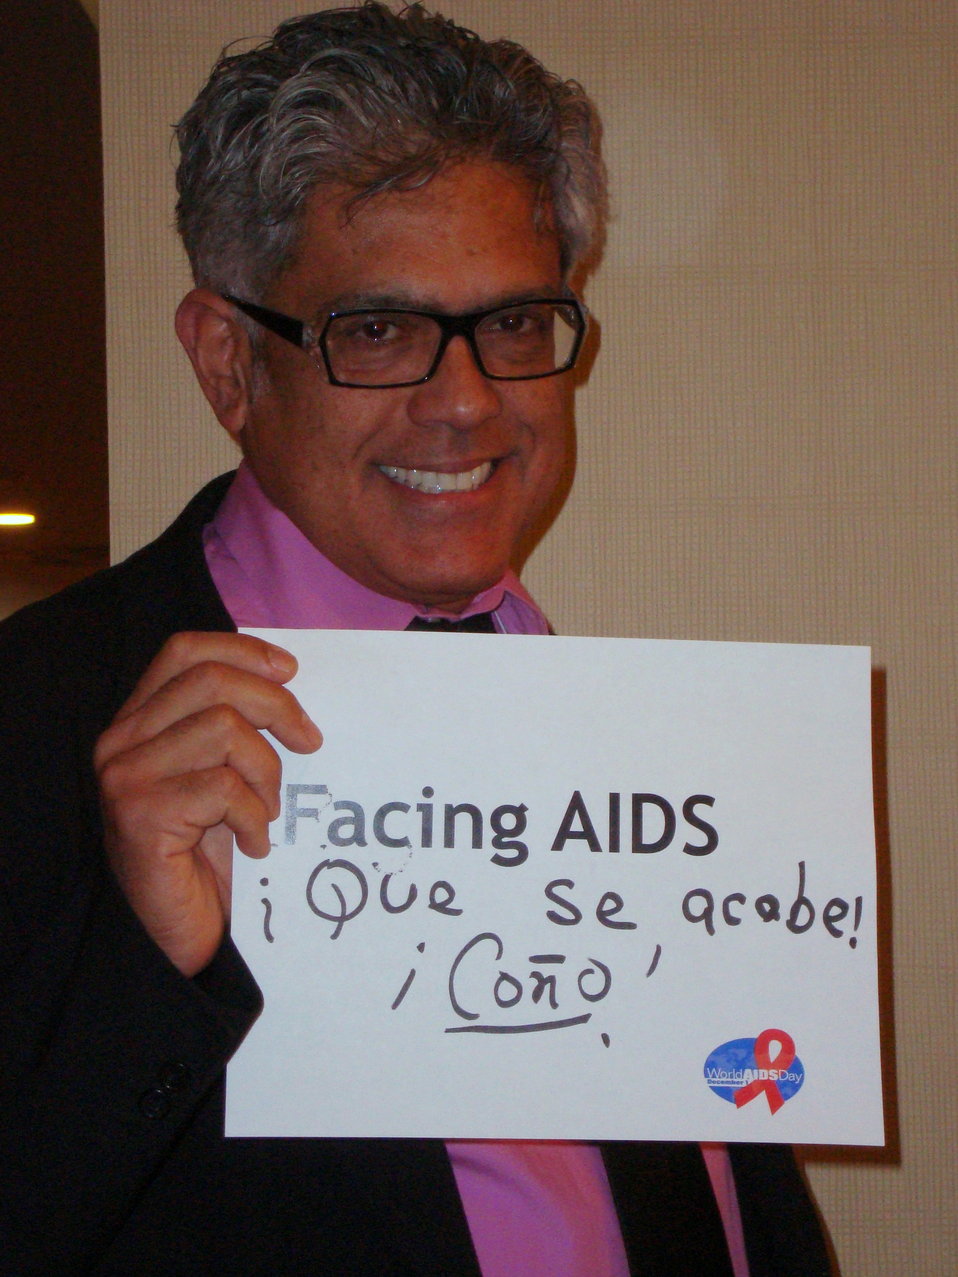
FacingAIDSCampaign 042